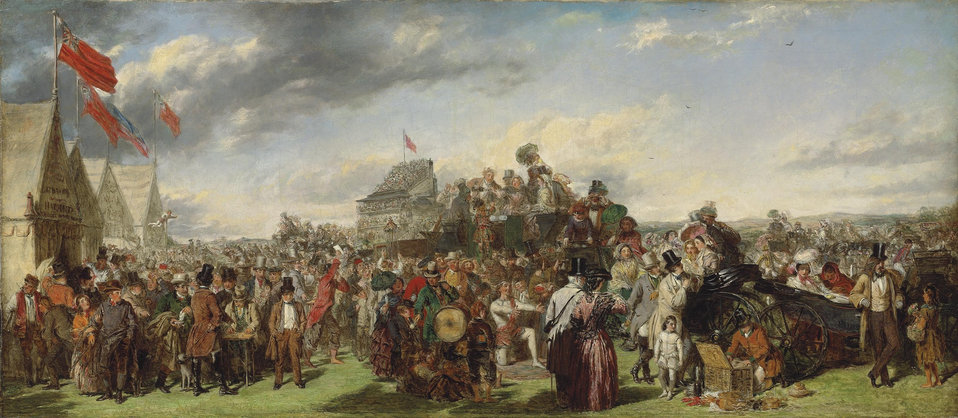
Derby Day by William Powell Frith, c. 1850s. 'First study' for the painting. Oil on canvas, 39.4 x 91.1 cm